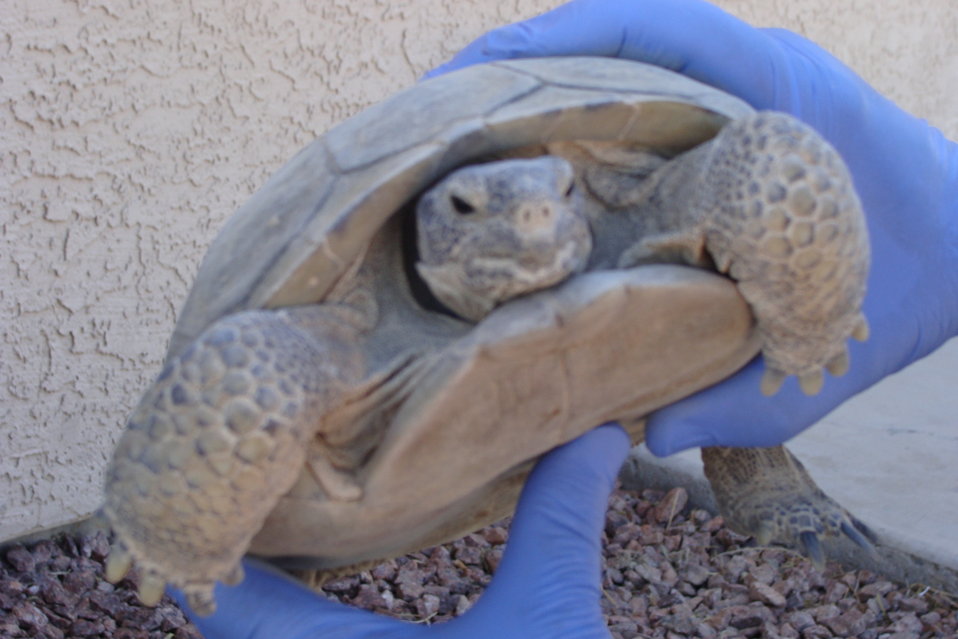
Mojave Desert Tortoise

The U. S. Fish and Wildlife Service has announced the availability of a Revised Recovery Plan for the threatened Mojave population of the desert tortoise (Gopherus agassizii) under the Endangered Species Act (ESA). The Plan takes a new approach to reversing declines in Mojave desert tortoise populations through a coordinated effort of science-based implementation and evaluation of conservation actions.

Unlike the previous Recovery Plan, which focused on mitigation measures, this Plan recognizes the need to adjust to the accelerating pace of environmental change and its impact on key resource management issues, such as corridors and connectivity. The Plan will be a living document that advances a natural resource management model where ongoing detection of changes and attribution of causes will provide the basic information on whether or not the desert tortoise or its ecosystem is changing beyond natural variability.

By continuous examination of vulnerability, exposure, sensitivity, and adaptive capacity of the desert tortoise to environmental change, resource managers will be able to update the Plan as it is being implemented with conservation measures that will help the desert tortoise recover.